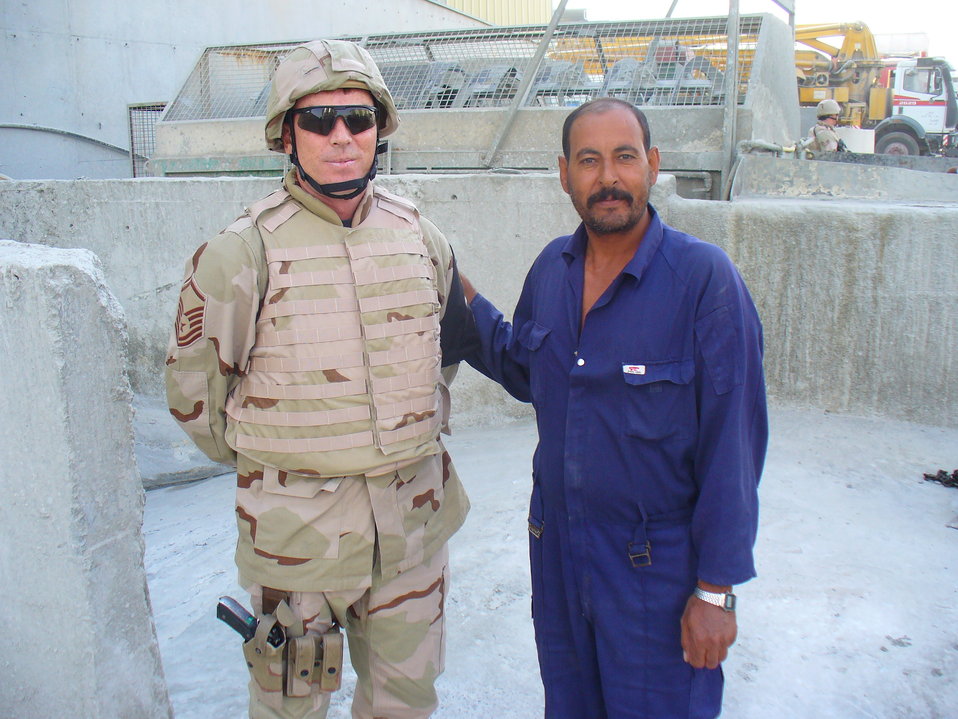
Change of Pace

Rev. John I. Jenkins, C.S.C., president of the University of Notre Dame, speaks to ROTC cadets and midshipmen after leading them on a two-mile trek through inclement conditions early morning Tuesday, Oct. 24, 2006. Father Jenkins is a marathon runner and enthusiast.